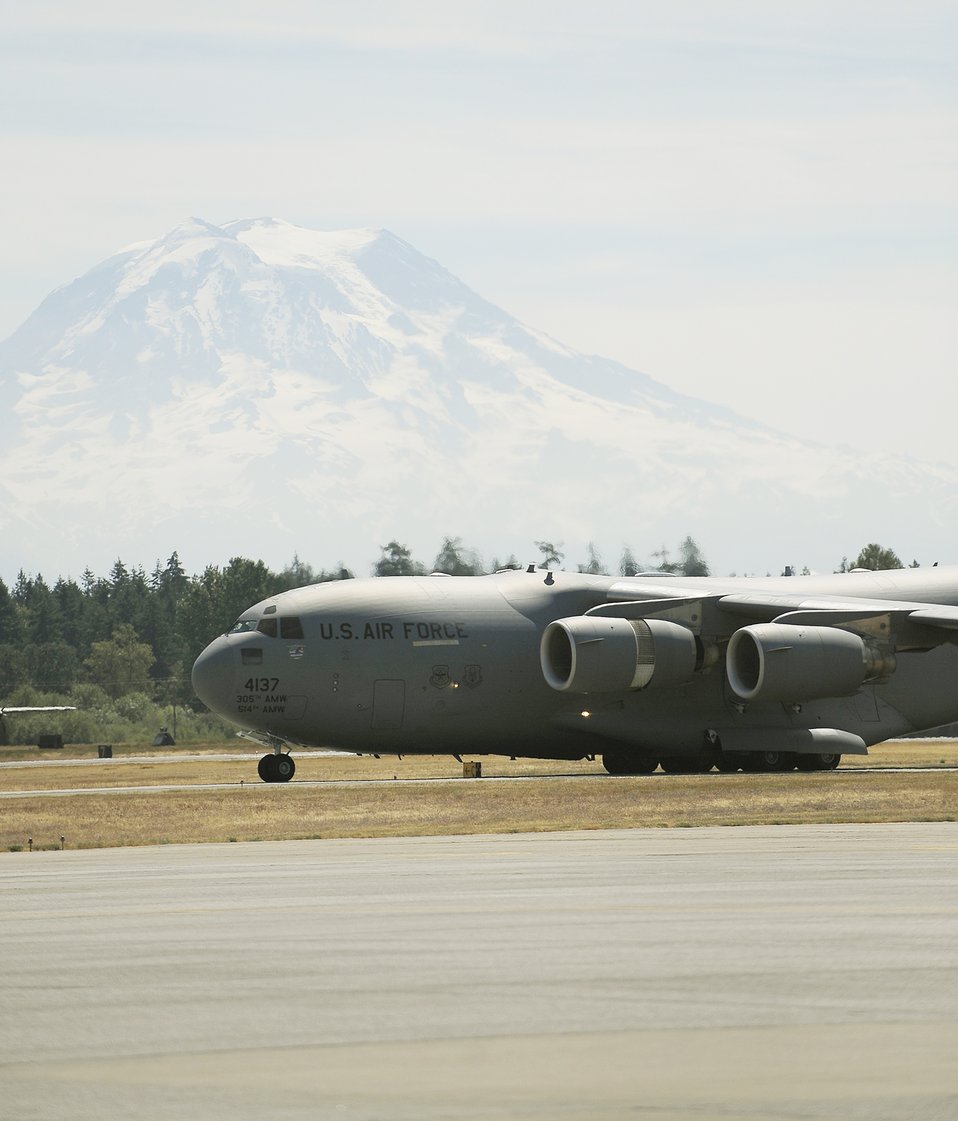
Ready to compete

A C-17 Globemaster III arrives for Air Mobility Rodeo 2009 July 18 at McChord Air Force Base, Wash. The Rodeo is an international combat skills and flying operations competition that develops and improves techniques and procedures for mobility operations.